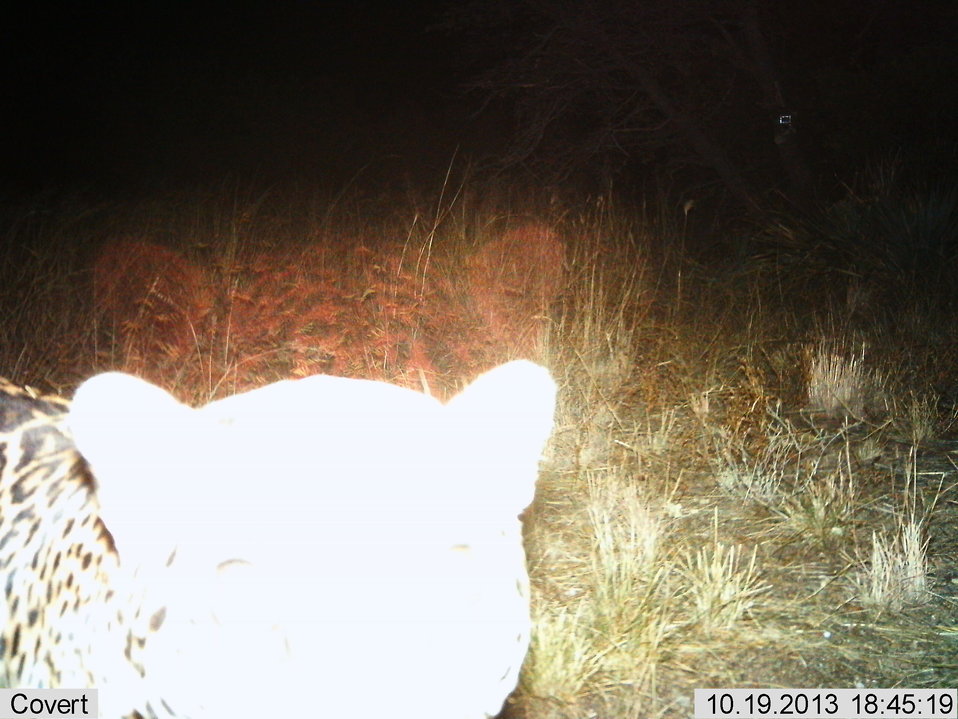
Male jaguar photographed by automatic wildlife cameras in the Santa Rita Mountains on October 19, 2013, as part of a U.S. Fish and Wildlife Service/Department of Homeland Security-funded jaguar survey conducted by University of Arizona. This is the first of three photos from October 19 at this location. The jaguar has been photographed previously at this location.